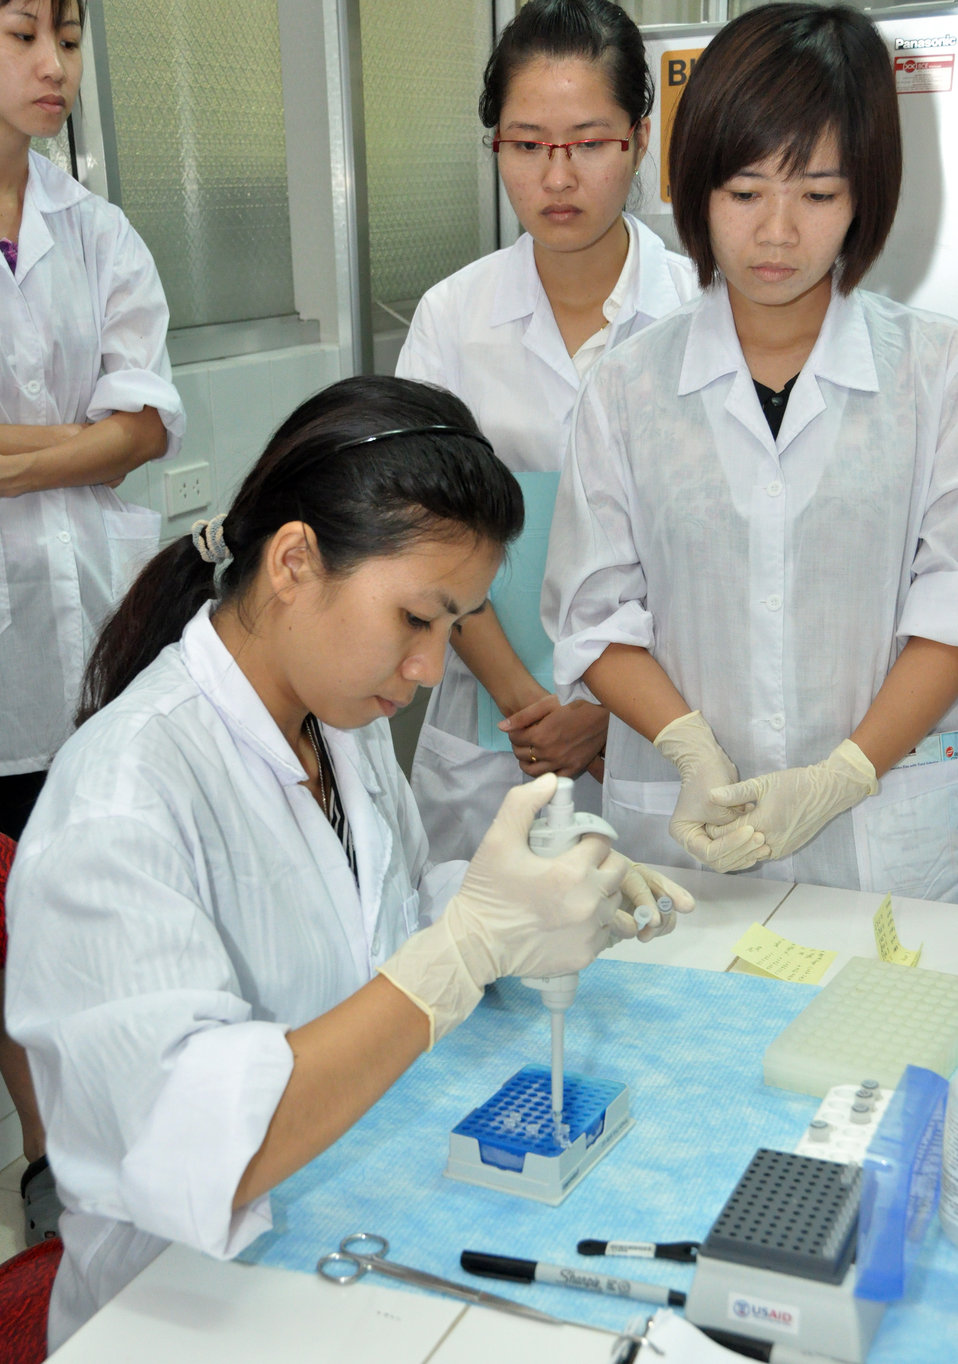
Animal virus detection lab training in Hanoi

Trainee learns how to detect viruses in Hanoi under USAID program.